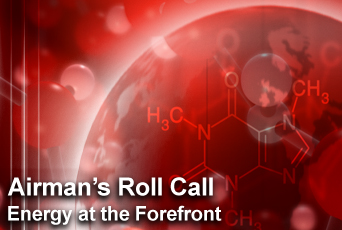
Airman's Roll Call: Energy at the forefront

This week's Airman's Roll Call focuses on how individual Airmen are in a position to make a huge impact in the Air Force's overall efforts to conserve energy. Enlisted Airmen make up 80 percent of the Air Force, and by taking simple actions you can save the Air Force valuable resources and dollars.